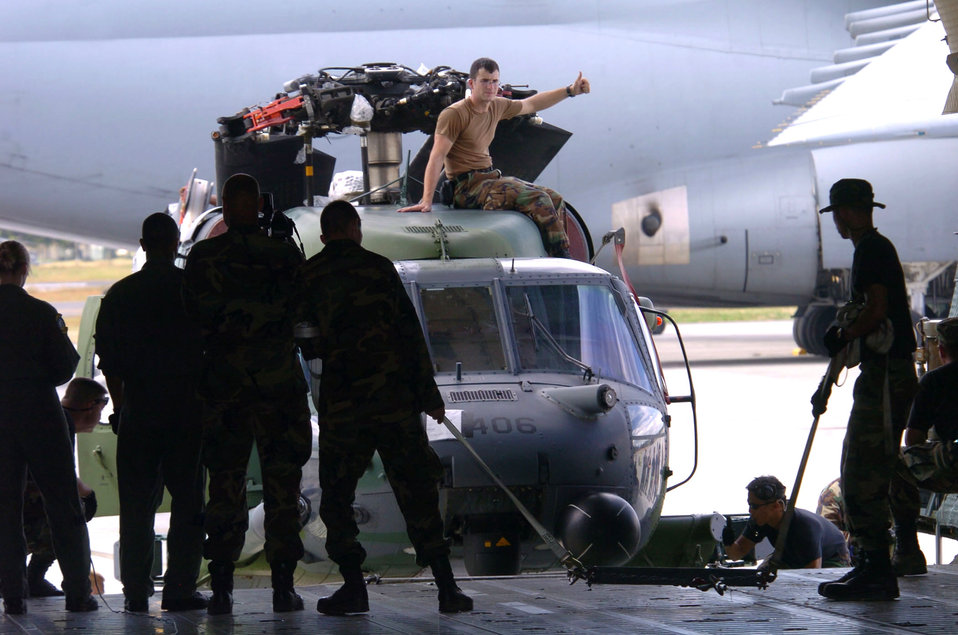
Heading home

COLOMBO, Sri Lanka -- Airmen of the 33rd Rescue Squadron load an HH-60 Pave Hawk helicopter into a C-5 Galaxy after supporting Operation Unified Assistance here. The helicopters and Airmen deployed from Kadena Air Base, Japan, and are returning to their home station after helping deliver relief goods to tsunami victims.